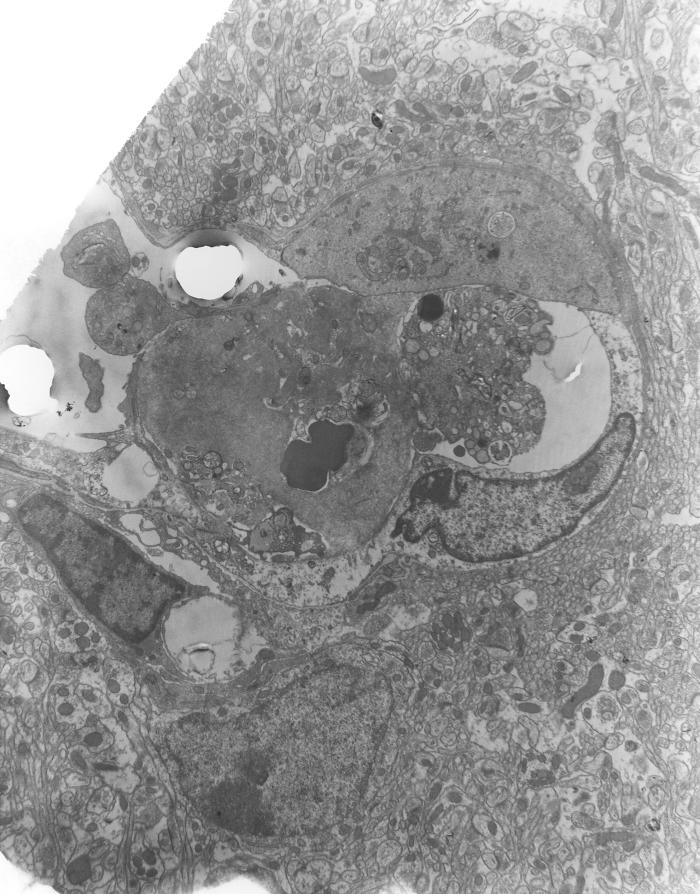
This 1978 transmission electron micrograph (TEM) depicted a brain capillary of mouse that had been experimentally infected intravenously with Orientia tsutsugamushi rickettsial micro-organisms. This photomicrograph revealed that the capillary lumen was partially occluded by a thrombus, and a hypertrophic, degenerating, apparently detached endothelial cell containing several visible organisms free within its cytoplasm.